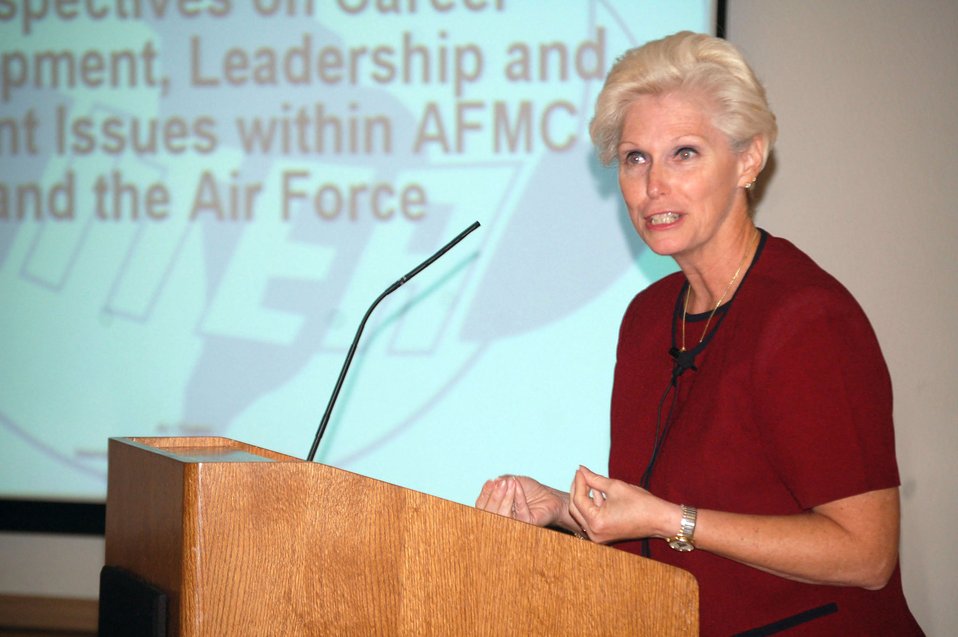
AFMC executive director discusses challenges

Barbara Westgate discusses the increasing cost of military health care with attendees from the International Test and Evaluation Association Antelope Valley Chapter Sept. 5 at Edwards Air Force Base, Calif. Mrs. Westgate, the Air Force Materiel Command executive director, also talked about recapitalization and the new permanent change of station guidelines.